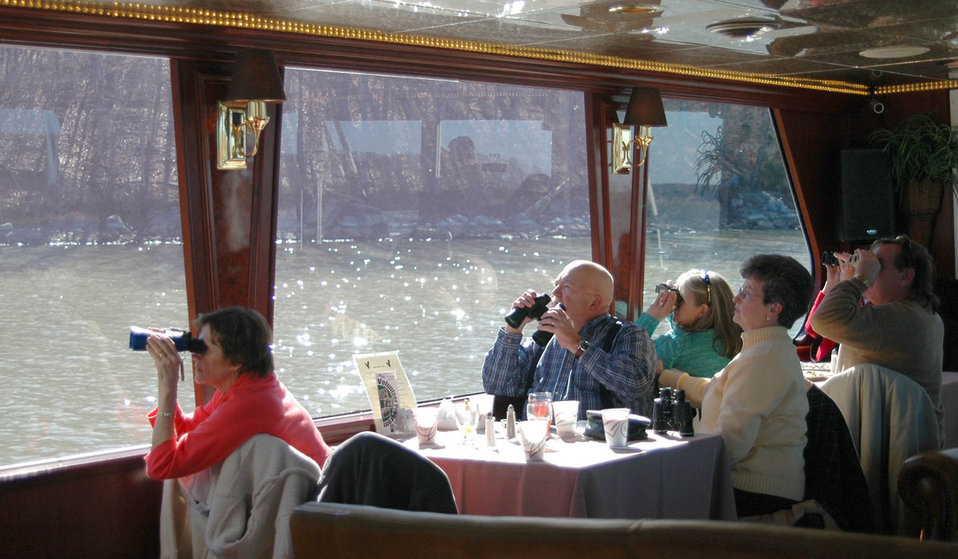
LBL Eagle Viewing 2 By Shannon Brockway

Visitors sight several eagles during a recent guided boat tour offered by Land Between The Lakes Recreational area in western Kentucky and Tennessee. The U.S. Forest Service manages this area, which attracts bald eagles and vacationers to local shores because of great fishing. When northern waters freeze, many bald eagles fly south to find open waters where they can catch fish. Shannon Brockway/U.S.